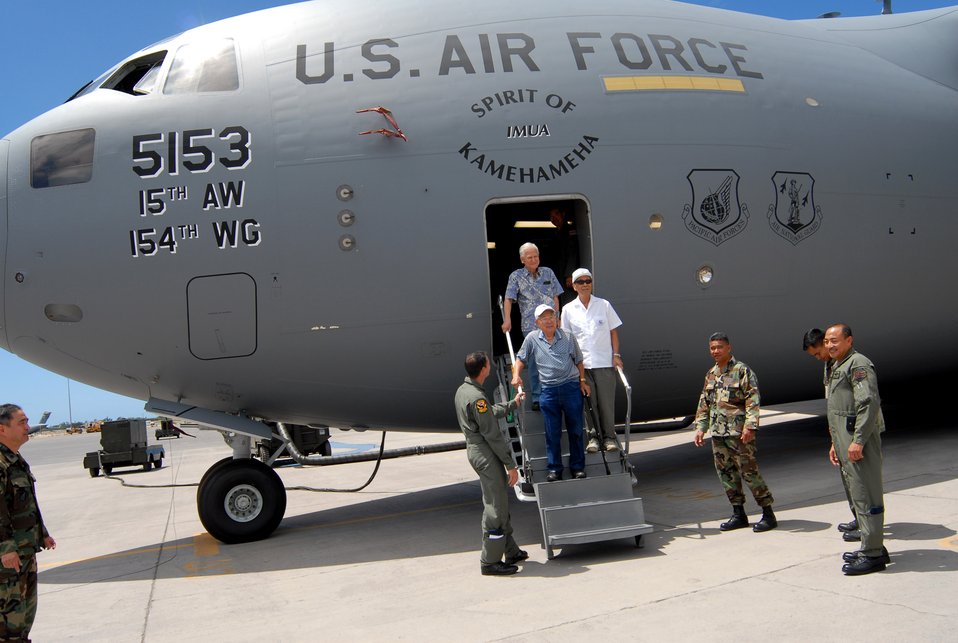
WWII veterans tour Hickam

World War II veterans who served in the 100th Infantry Battalion toured a C-17 Globemaster III June 25 at Hickam Air Force Base, Hawaii. Airmen from the Hawaii Air National Guard's 154th Wing hosted the tour.